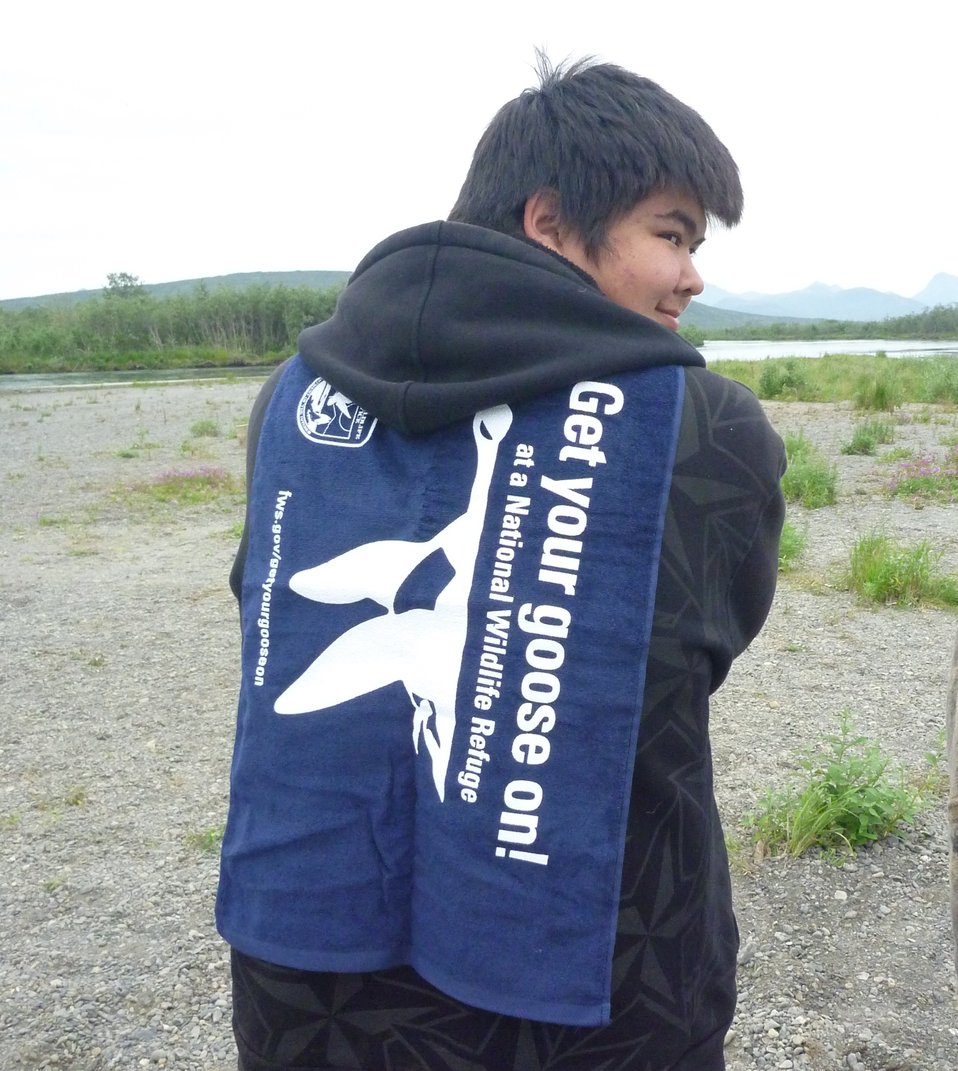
GYGO! - Alaska Style!

These youngsters Get Their Goose On! at Togiak National Wildlife Refuge in southwest Alaska.

The refuge supports 35 species of fish, 30 species of terrestrial mammals, 17 species of marine mammals, and 201 bird species.